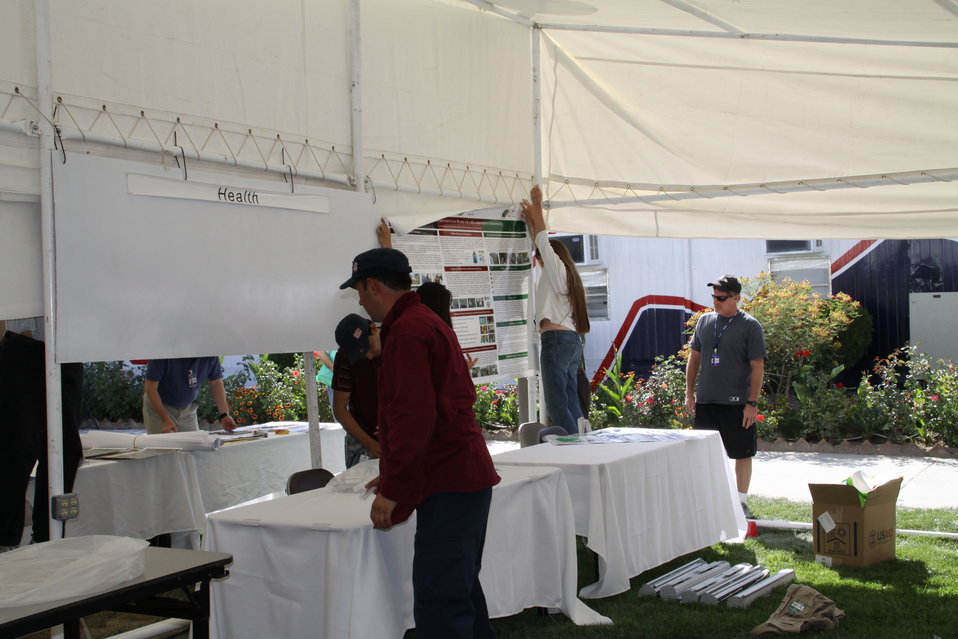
Official July 4th Event Preparation

Workers prepare the program tents for the official July 4th event at the US Embassy.